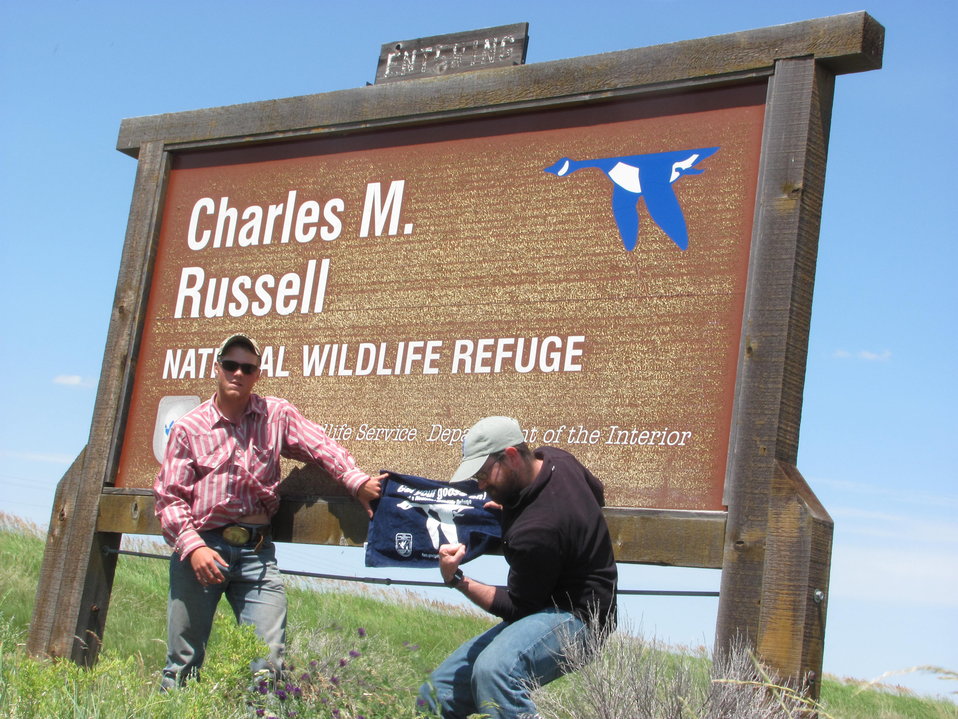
Get Your Goose On!

The Benton Lake National Wildlife Refuge traveling strike team Gets Their Goose On! at Charles M. Russell National Wildlife Refuge.